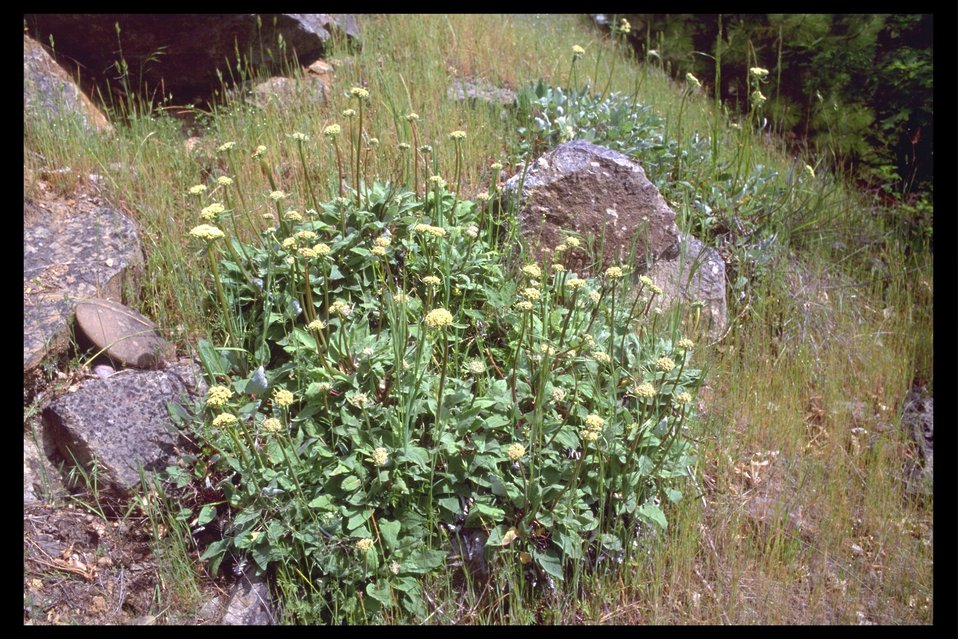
Arrowleaf Buckwheat (Eriognum compositum) near Lost Creek Lake.